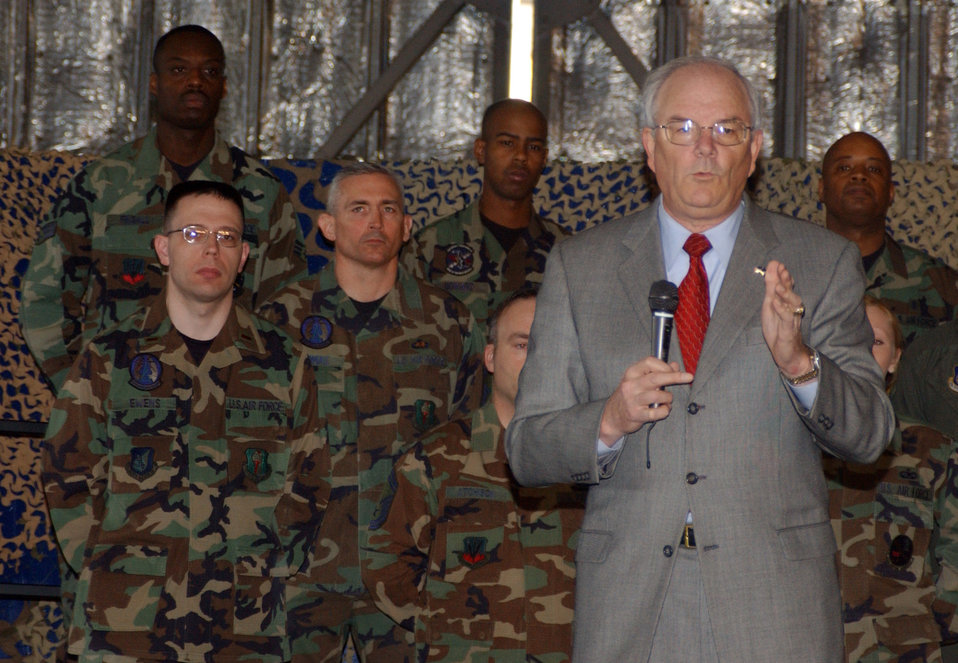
SECAF visits mainland Japan

Secretary of the Air Force Michael W. Wynne speaks to Airman during his visit to Misawa Air Base, Japan, on Saturday, March 25, 2006.